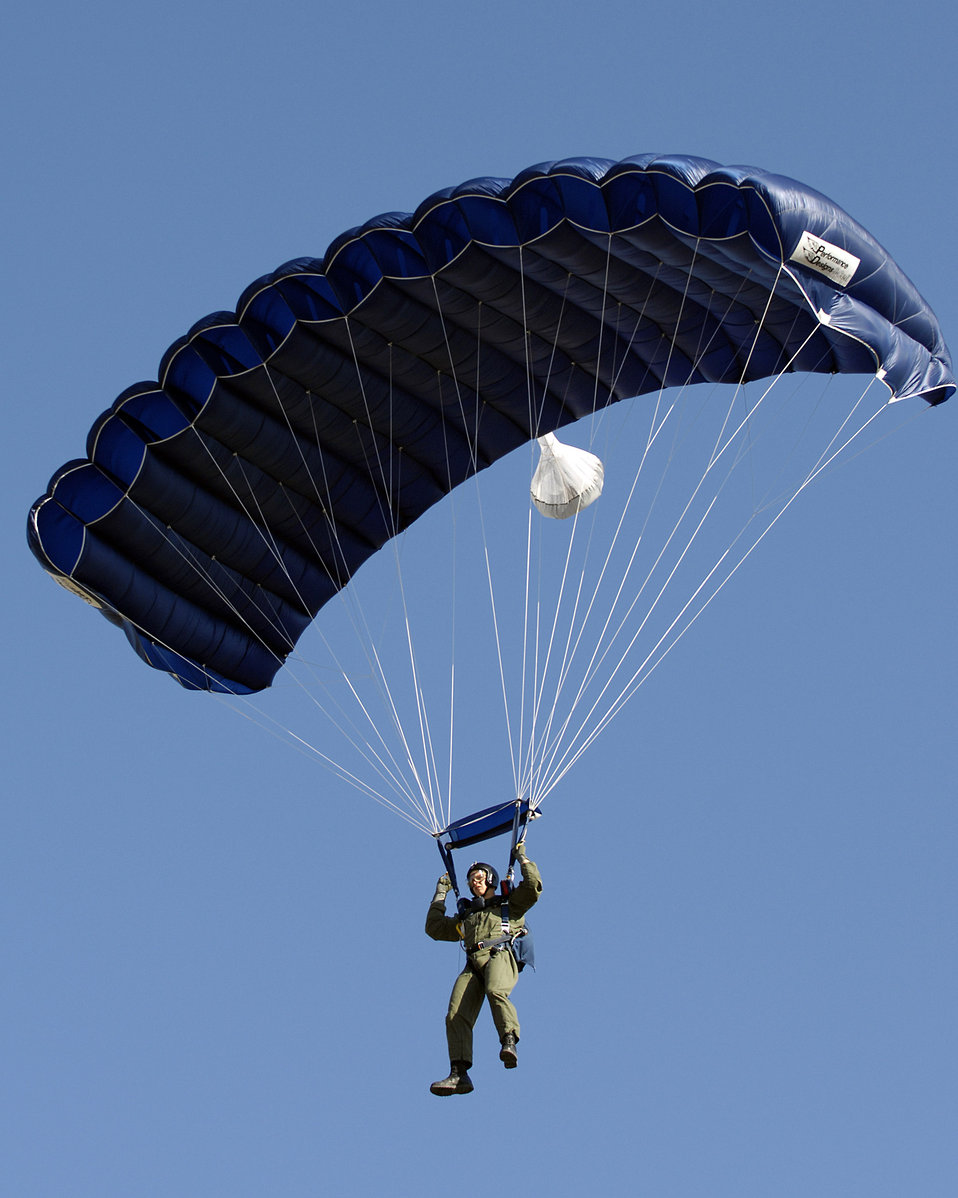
Earning those jump wings

U.S. Air Force Academy Cadet Harrison Marble makes a jump from 4500 feet above the academy on June 27 during Airmanship 490, Basic Parachuting, an airmanship program where cadets earn their basic jump wings after successfully completing five free-fall jumps.